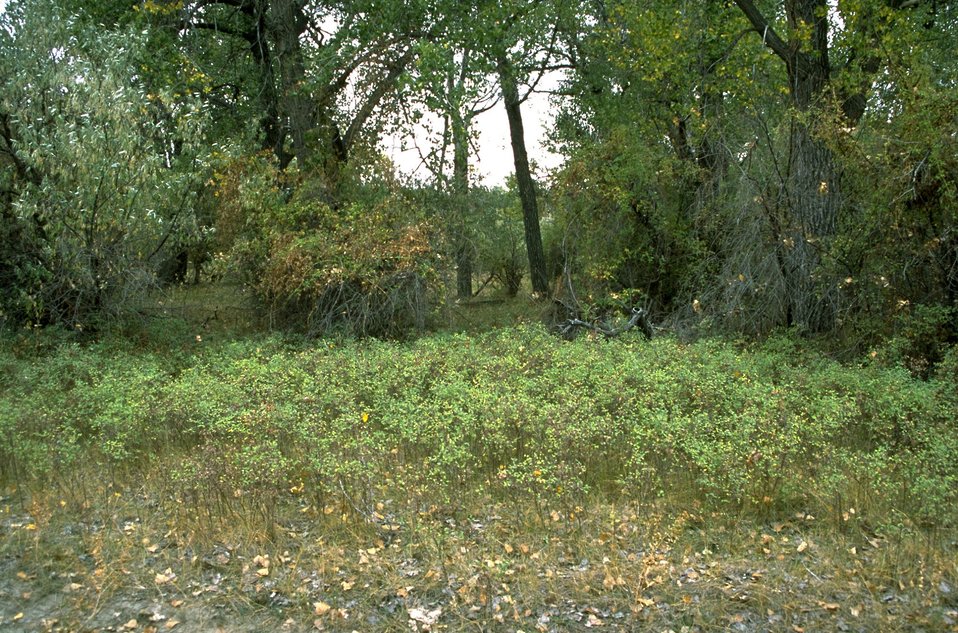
Vegetative area at Howrey Island Recreation Area